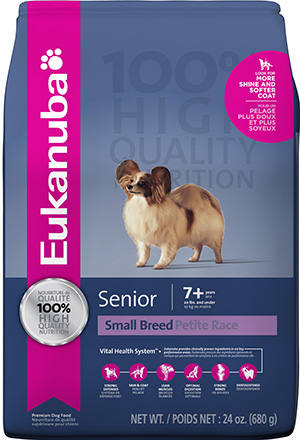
RECALLED – Dog and Cat foods - Dry

August 14, 2013 – Product Recall – P&G Voluntarily Recalls Limited Quantity of Dry Pet Food Due to Possible Health Risk.